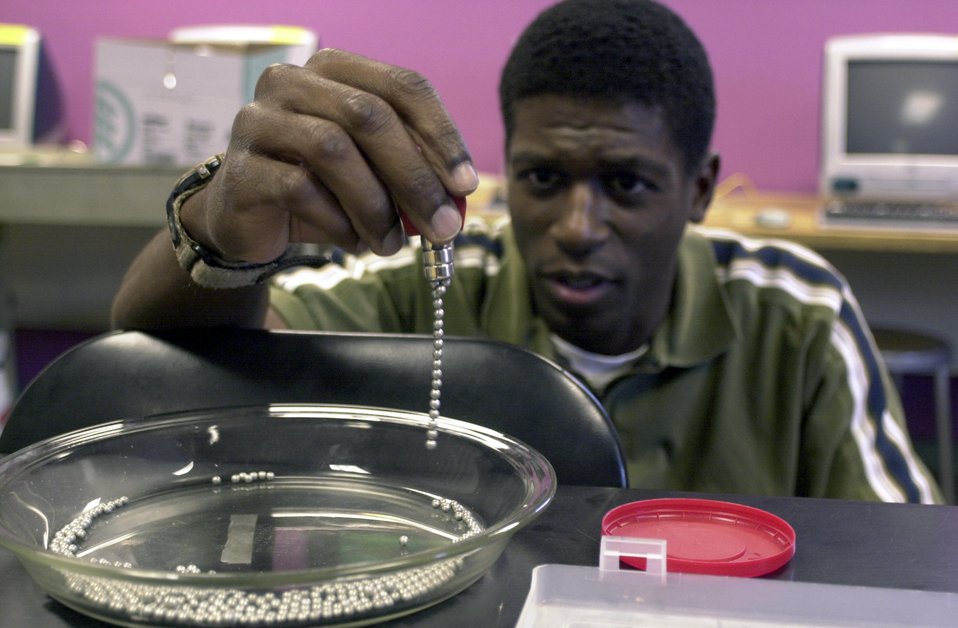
A MIDDLE SCHOOL SCIENCE TEACHER DEMONSTRATING A MAGNETISM EXPERIMENT AT THE THOMAS JEFFERSON NATIONAL ACCELERATOR FACILITY.

IN JULY, 2003 THOMAS JEFFERSON NATIONAL ACCELERATOR FACILITY HELD ITS FOURTH ANNUAL P.E.S.T. (PHYSICS ENRICHMENT FOR SCIENCE TEACHERS) PROGRAM. THE PROGRAM, ATTENDED BY MIDDLE SCHOOL TEACHERS THROUGHOUT THE U.S., IS DESIGNED TO FURTHER THE KNOWLEDGE OF SCIENCE TEACHERS BY PROVIDING THEM WITH A MINI COURSE IN BASIC PHYSICS.